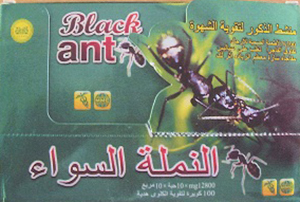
20140501163211496pic2 Page 1